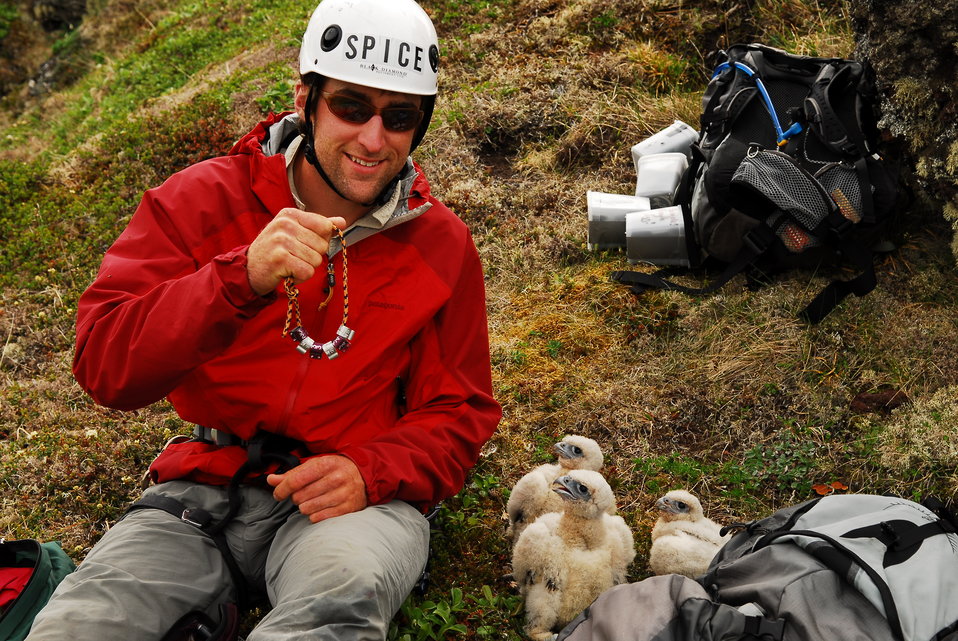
Gyrfalcon nestlings anticipating being banded

In 2004 a multi-year research project was initiated investigating Gyrfalcons within the YDNWR.
Researchers banded and collected genetic samples from each nestling that was encountered.

USFWS Yukon Delta NWR